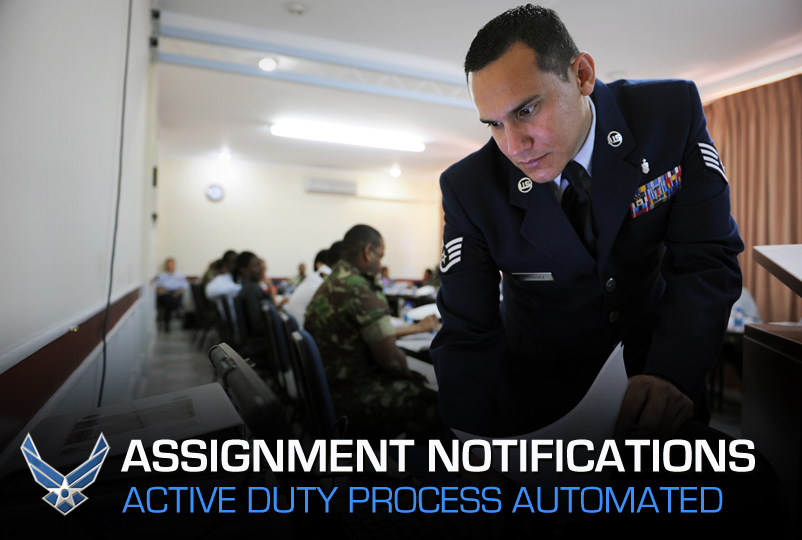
Assignment notification process automated